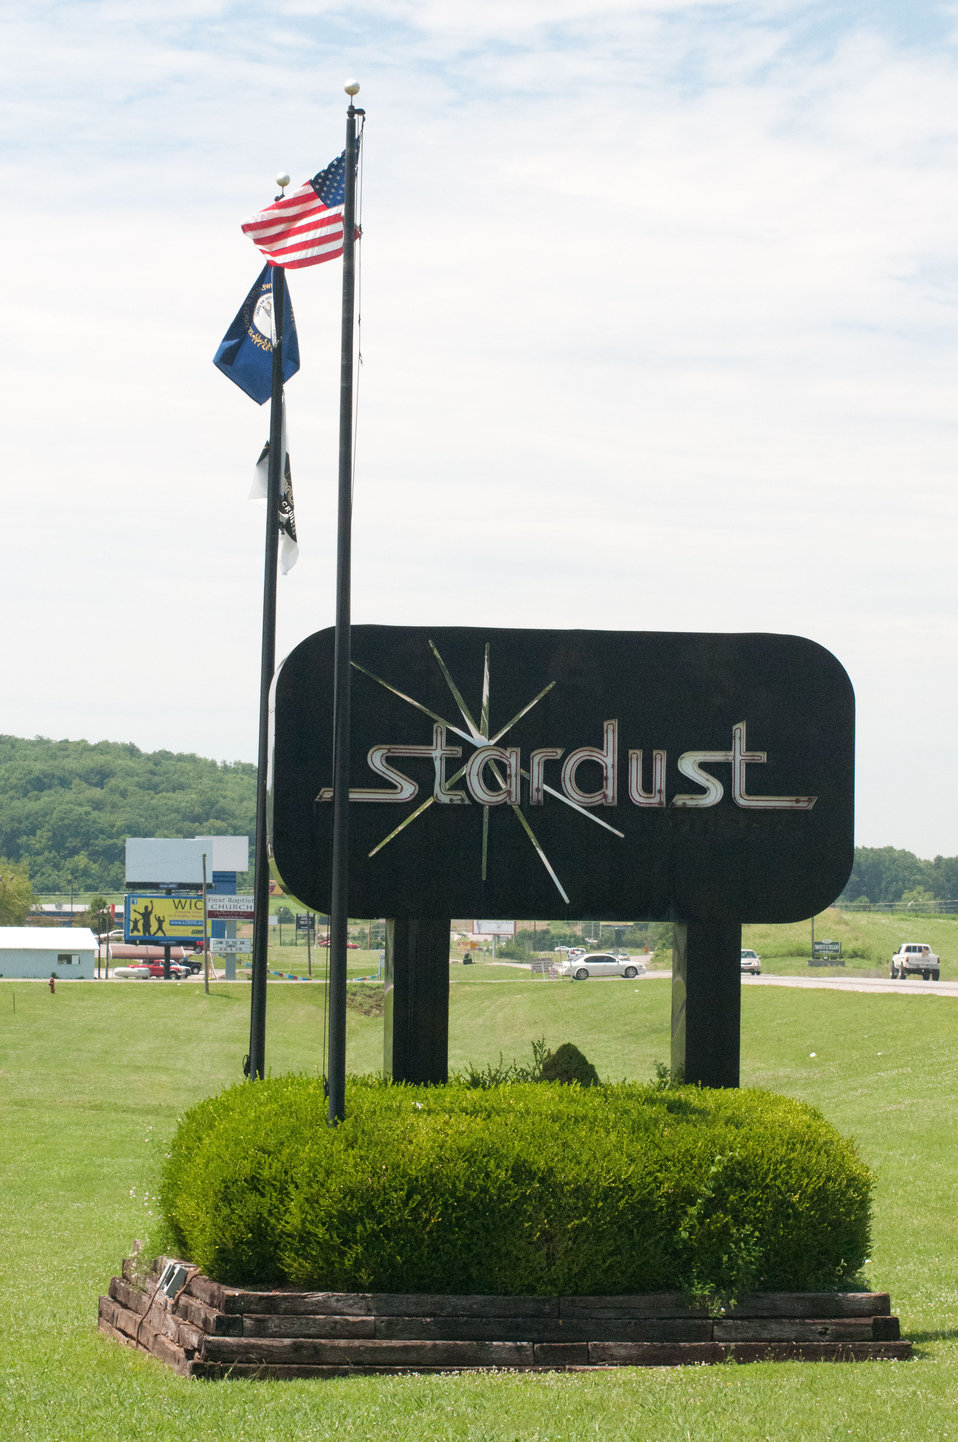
Stardust Industries is helping retool and redirect Kentucky’s houseboat manufacturing industry – which has been decimated because of the struggling economy – by using its facilities and manpower to create low-cost housing that is energy efficient. Rural Development obligated $499,000 in Rural Business Enterprise Grant funds to support this unique endeavor. Up until a few years ago, there were several successful houseboat manufacturers in the four-county area surrounding the city of Somerset. Most have now ceased operation or drastically reduced output, which has led to dramatic, long-term job loss. These new energy efficient homes will be constructed in redesigned, refitted houseboat factories using local workers that have been retrained.